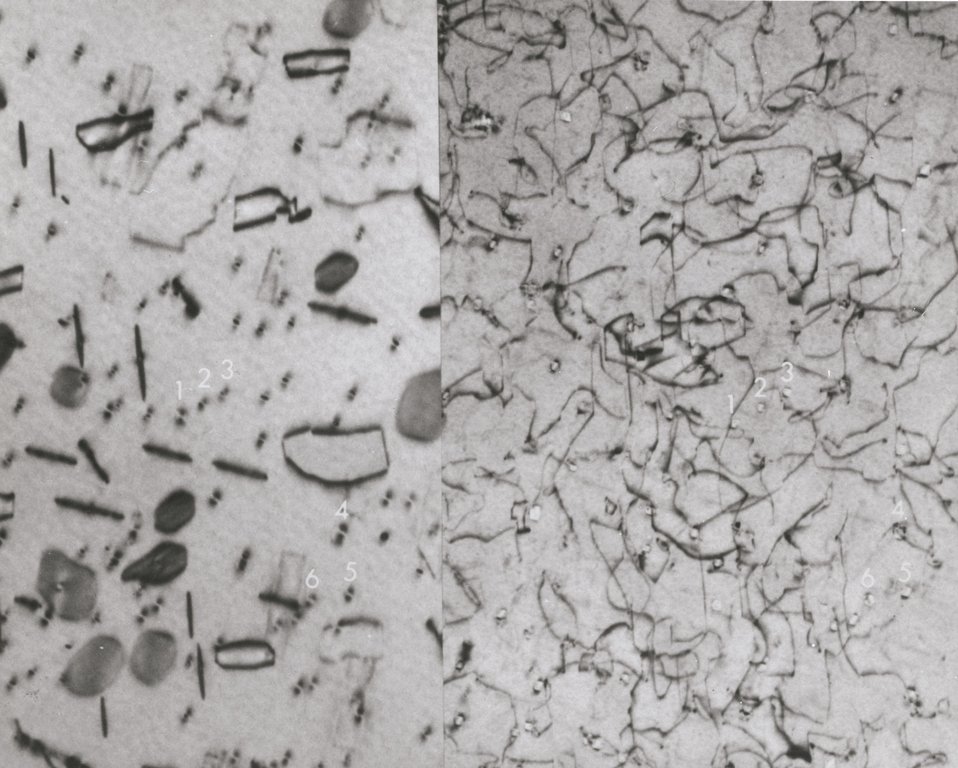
Swelling of fuel element cladding occurs as a result of high-temperature, fast-reactor irradiation. Recent experiments performed with the AEC's Hanford Engineering Development Laboratory 1-Mev. electron microscope show the effect of bombardment of stainless steel with electrons. c. 1973